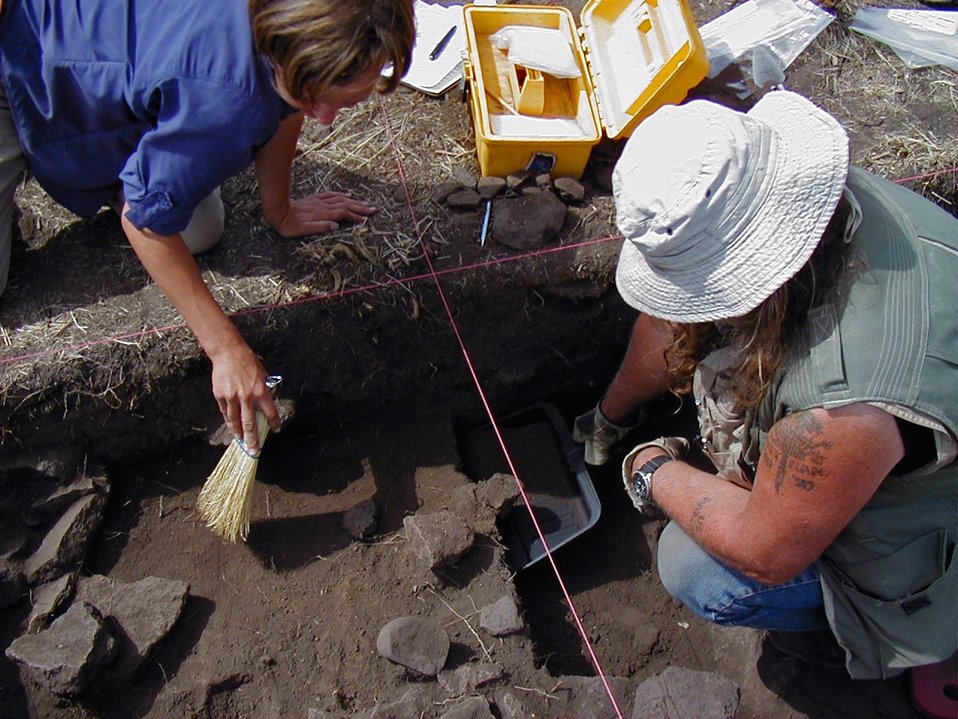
Oregon Archaeological Society and other volunteers have contributed thousands of hours of labor to on-going archaeological work at Burns BLM sites.